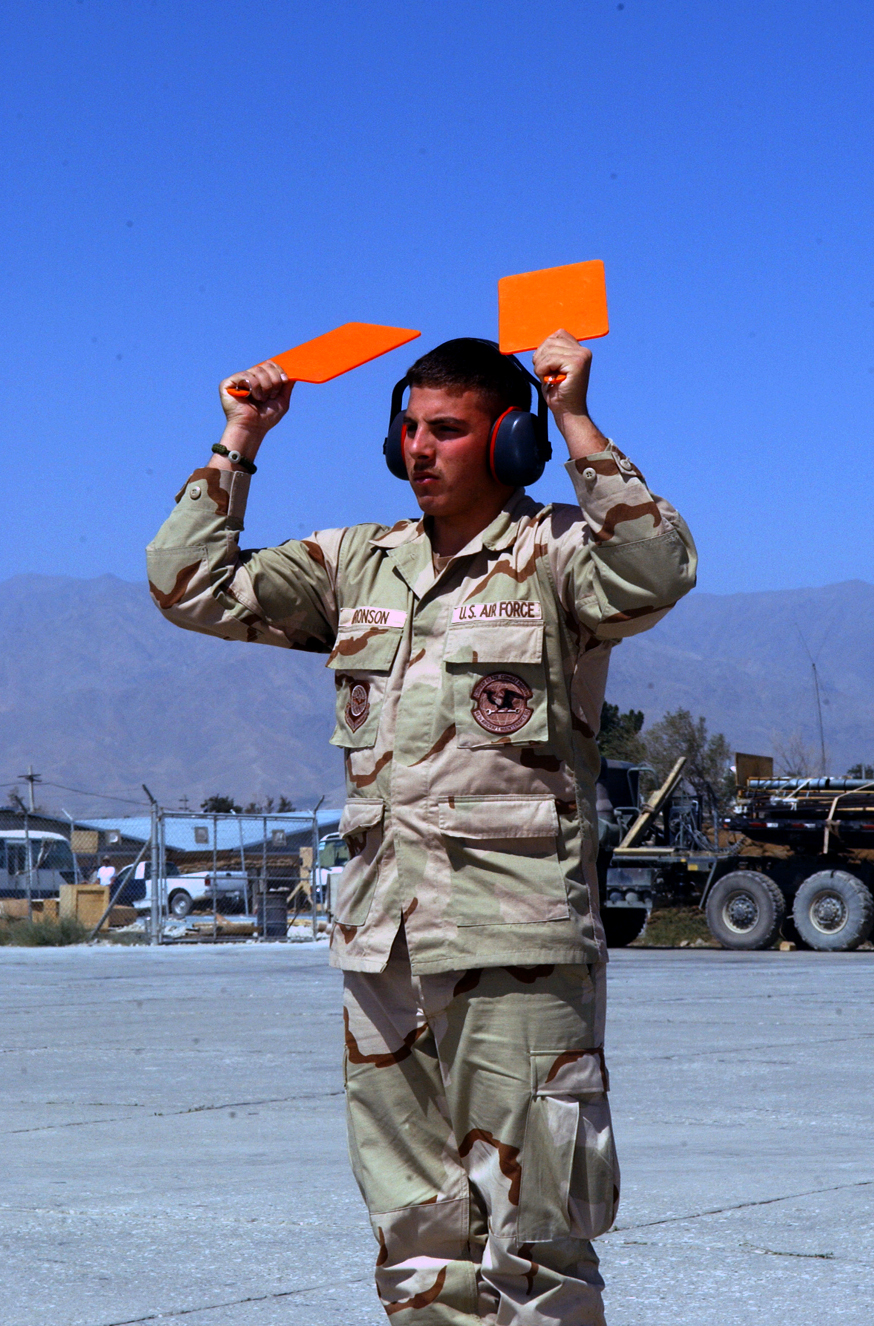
Over here

BAGRAM AIR BASE, Afghanistan -- Senior Airman George Bronson uses orange paddles to marshal a C-130 Hercules crew on the flightline here. Airman Bronson is a 455th Expeditionary Logistics Readiness Squadron transient-alert team member deployed from Little Rock AFB, Ark. The transient-alert Airmen handle an average of 14 aircraft each 12-hour shift.